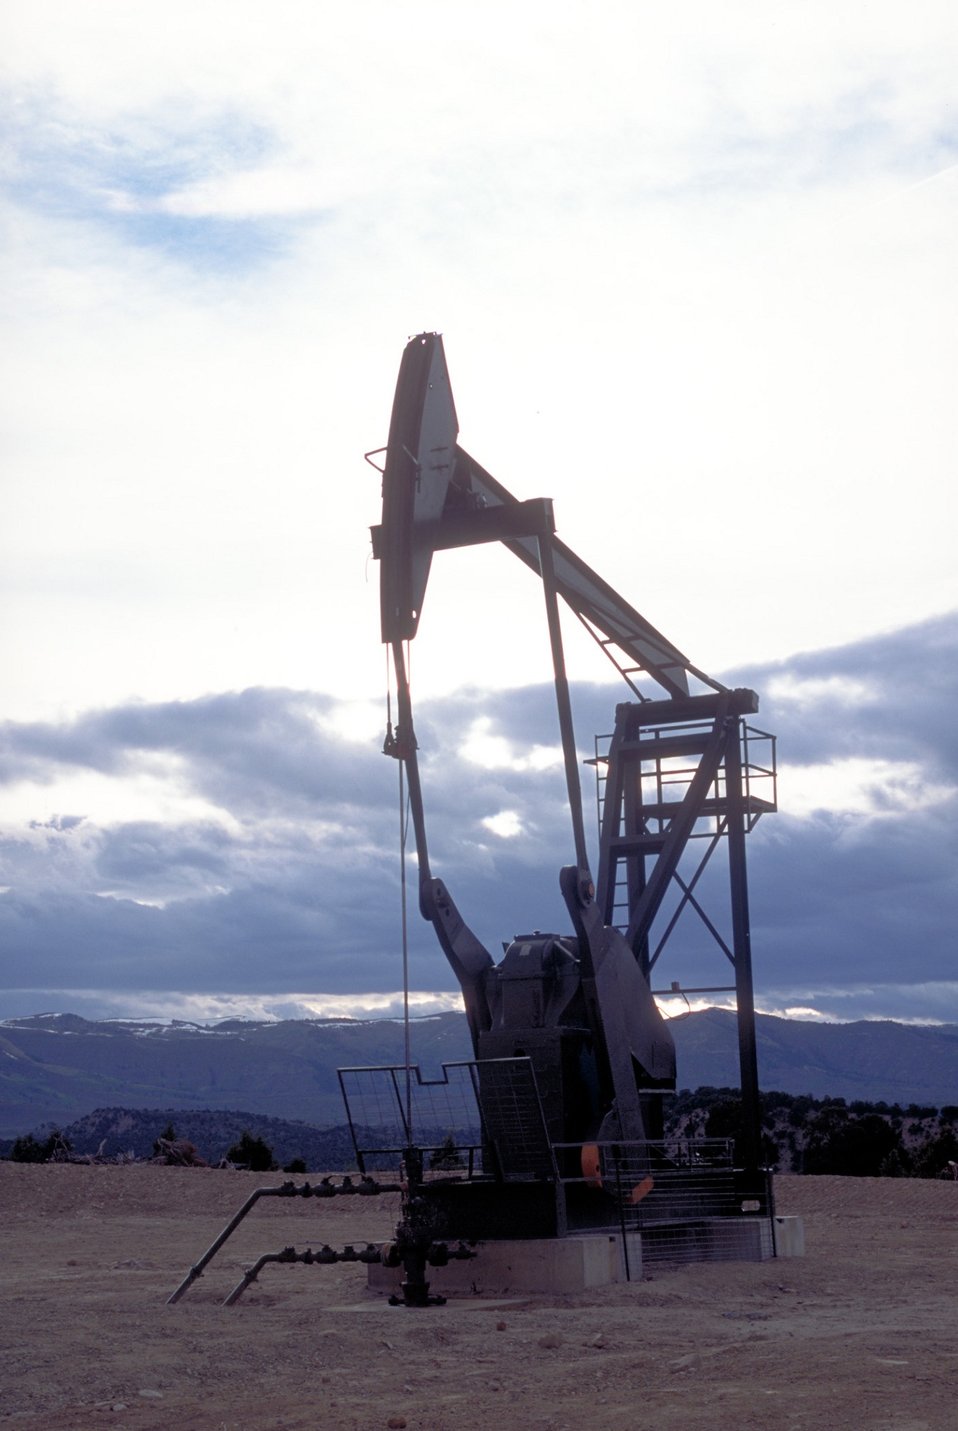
Pump unit producing coal bed methane near Price, Utah.